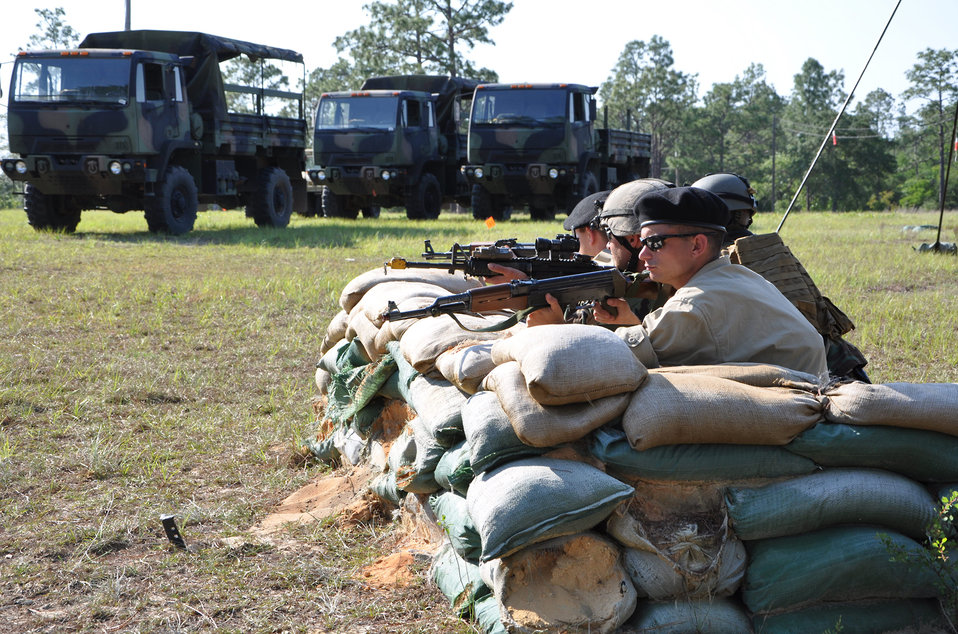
Raven Claw Forges Warrior Diplomats

U.S. Air Force combat aviation advisor trainees and simulated partner nation forces guard the U.S. camp May 24, 2011, during exercise Raven Claw at Duke Field, Fla. Raven Claw is the capstone event for the Air Force Special Operations Training Center's Combat Aviation Advisor Mission Qualification Course.